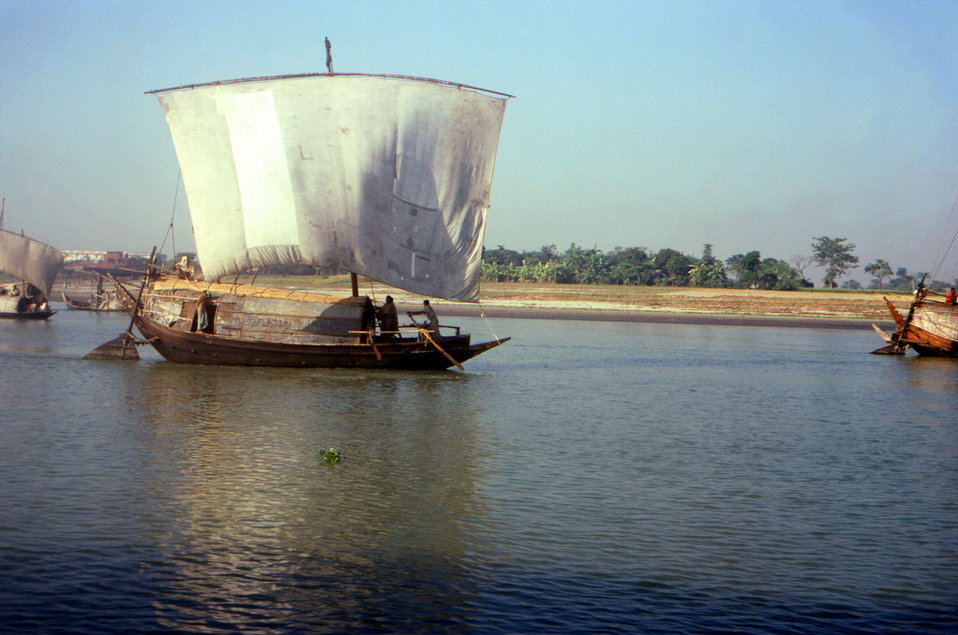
This December, 1975 photograph captured a square-rigged sailboat, as it moved along Bangladesh's Meghna River.